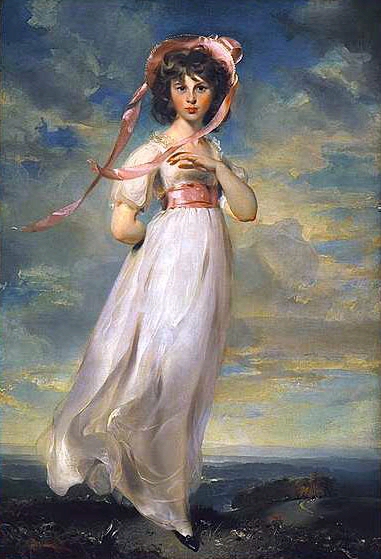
Thomas Lawrence Pinkie